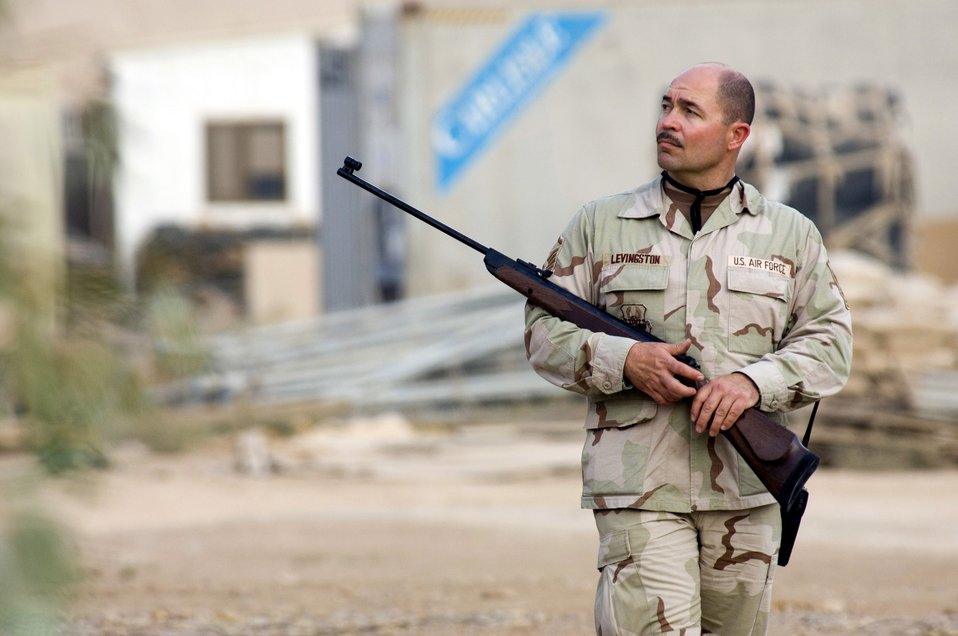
Protecting the flightline

BALAD AIR BASE, Iraq (AFPN) -- Master Sgt. John Levingston looks for potential targets around an aircraft shelter. Sergeant Levingston is using a .177 caliber pellet gun as part of the Bird Aircraft Strike Hazard (BASH) program. The BASH team works hand in hand with airfield operations and entomology preventing hazardous situations.